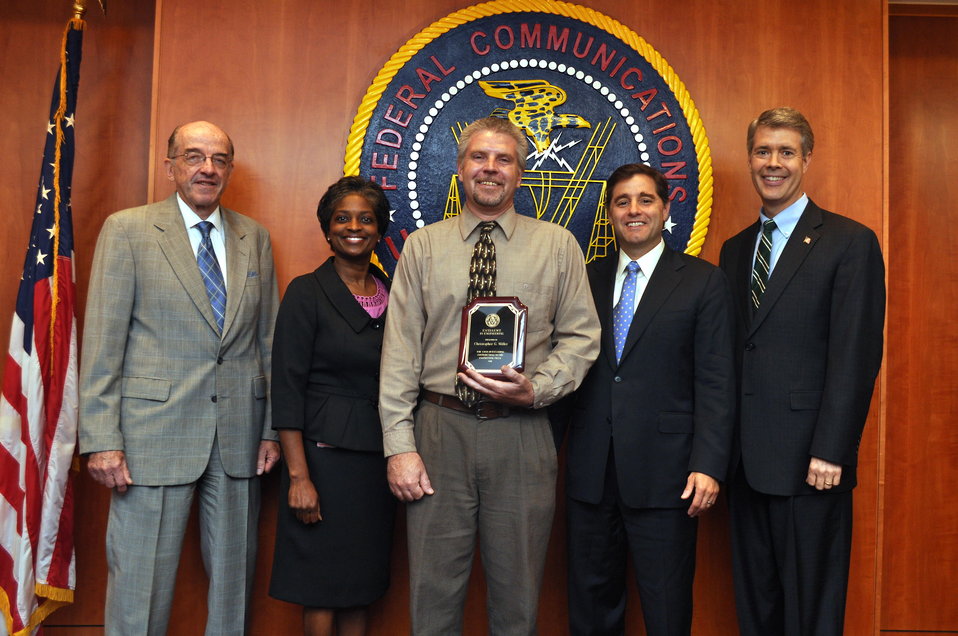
Engineers and Economists

At the August, 2011 Open Meeting the FCC recognized engineers and economists.